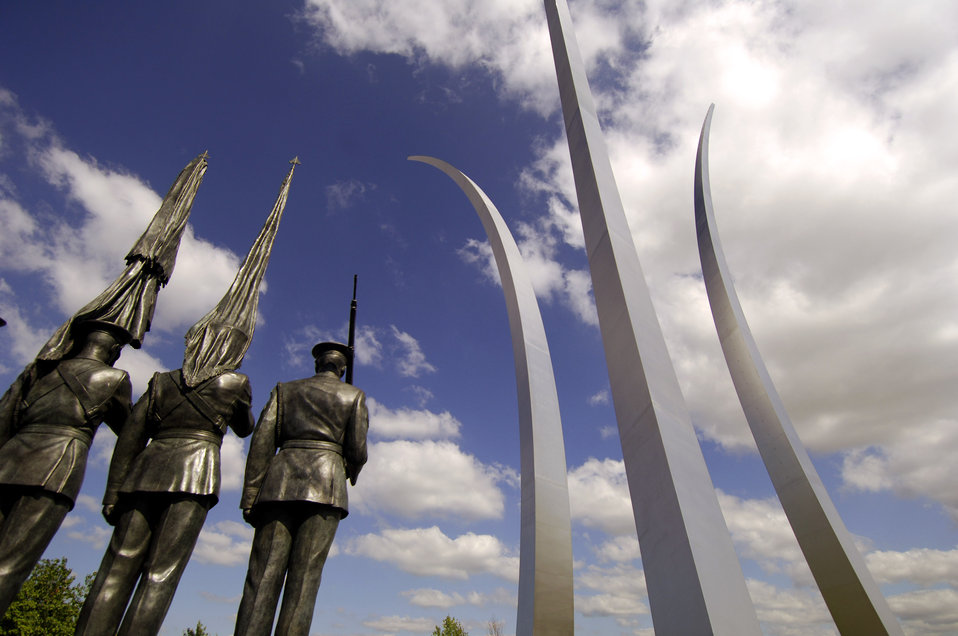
Integrity, Service, Excellence

A number of events took place Sept. 18 at the U.S. Air Force Memorial in Arlington, Va., on the Air Force's 60th anniversary.